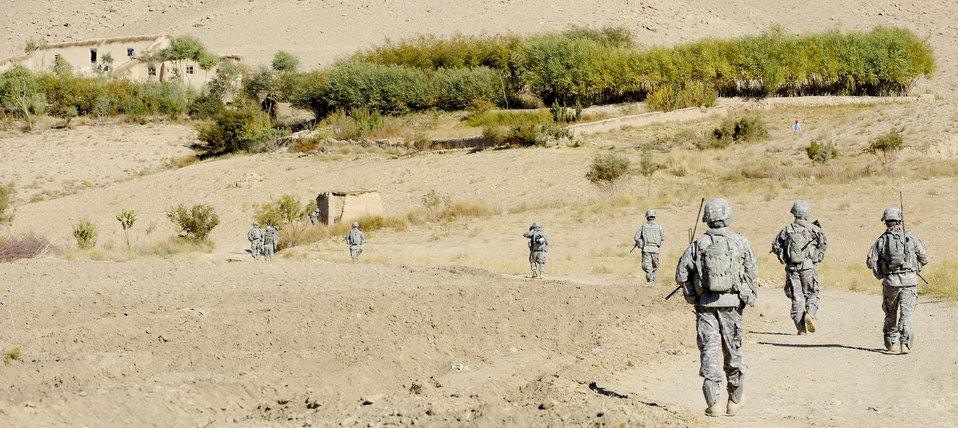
Provincial Reconstruction Team Zabul

Soldiers and Airmen walk toward a village during a patrol Nov. 1, 2010, near the city of Qalat, Afghanistan, in the Zabul Province. The Provincial Reconstruction Team Zabul is composed of Air Force, Army, Department of State, U.S. Agency for International Development and Department of Agriculture personnel who work with the government of Afghanistan to improve governance, stability and development throughout the province.